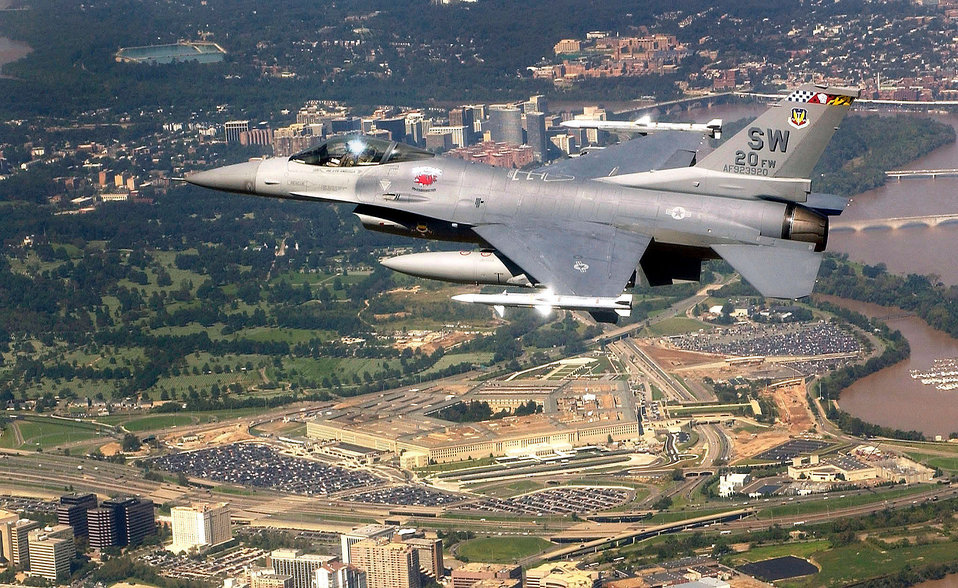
A noble mission

WASHINGTON -- An F-16 Fighting Falcon flies over the Pentagon as part of Operation Noble Eagle recently. The aircraft is assigned to the 20th Fighter Wing at Shaw Air Force Base, S.C.